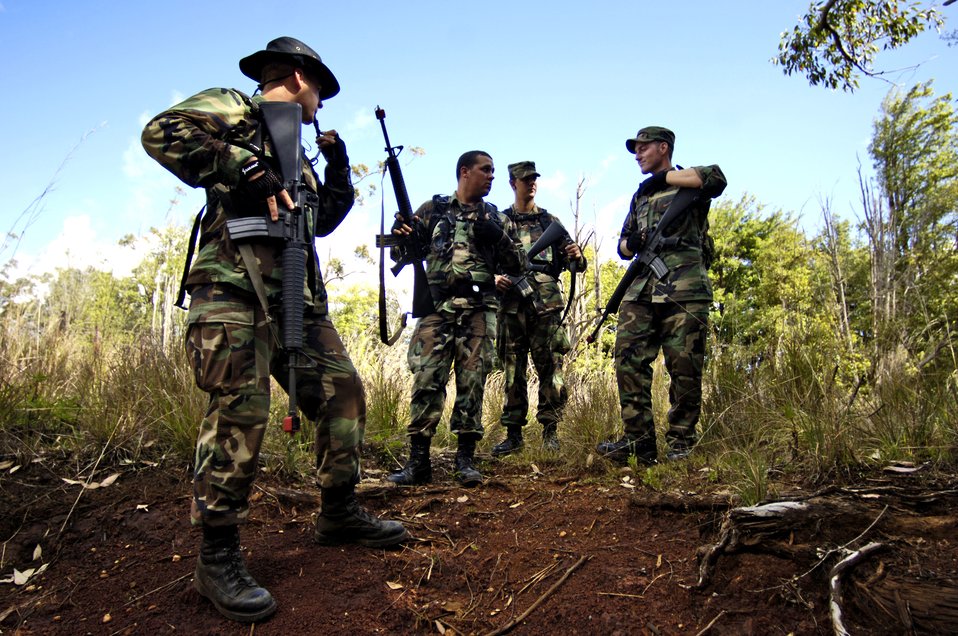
Survival refresher course